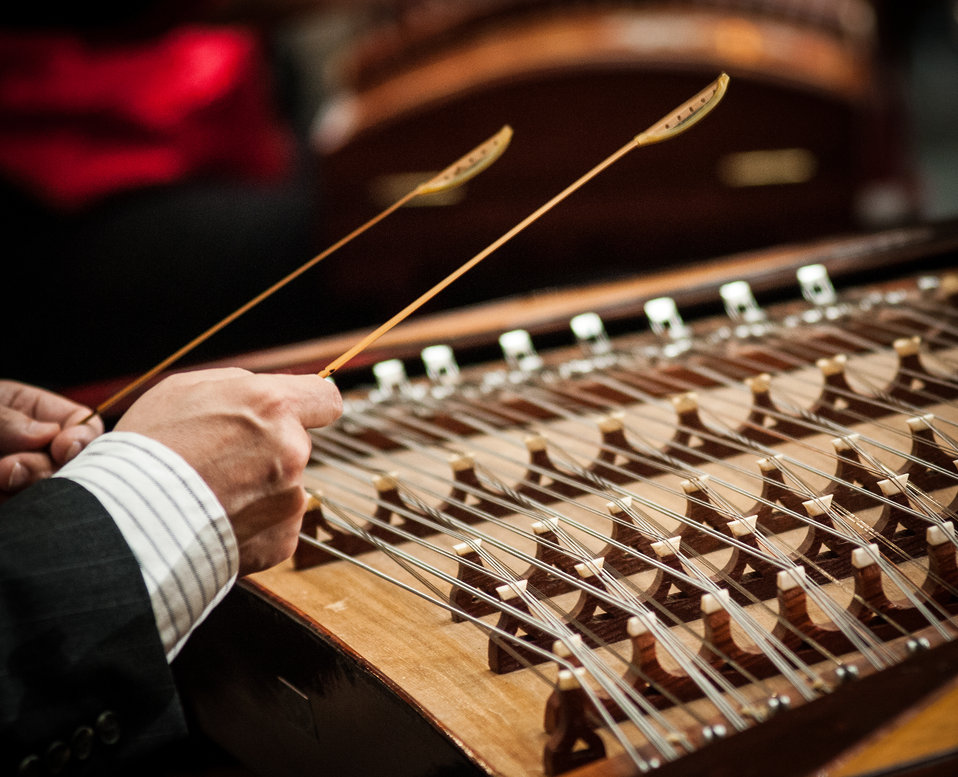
The Washington Chinese Traditional Orchestra Ensemble performs 'Melody of Purple Bamboo,' 'Jasmine Flower,' and 'Joys of Beaming,' during the U.S. Department of Agriculture (USDA), Asian Pacific American Heritage Month Observance, at the USDA headquarters, Whitten Building patio, in Washington, D.C., on Thursday, May 23, 2013. This year’s theme is “Building leadership; Embracing the Cultural Values and Inclusions.”